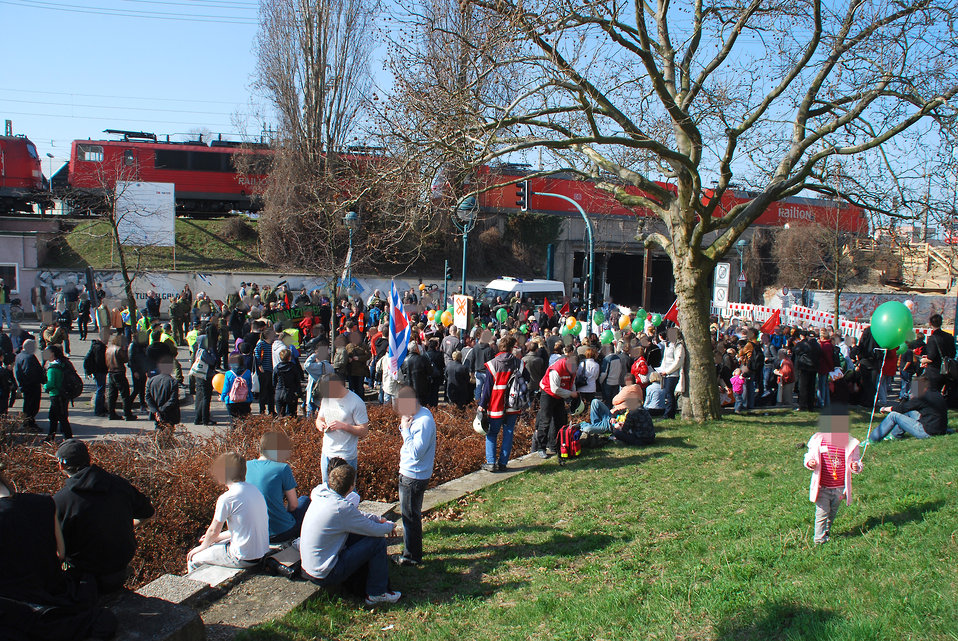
Proteste gegen den Nazi-Aufmarsch am 24.3.2012 in Frankfurt (Oder)